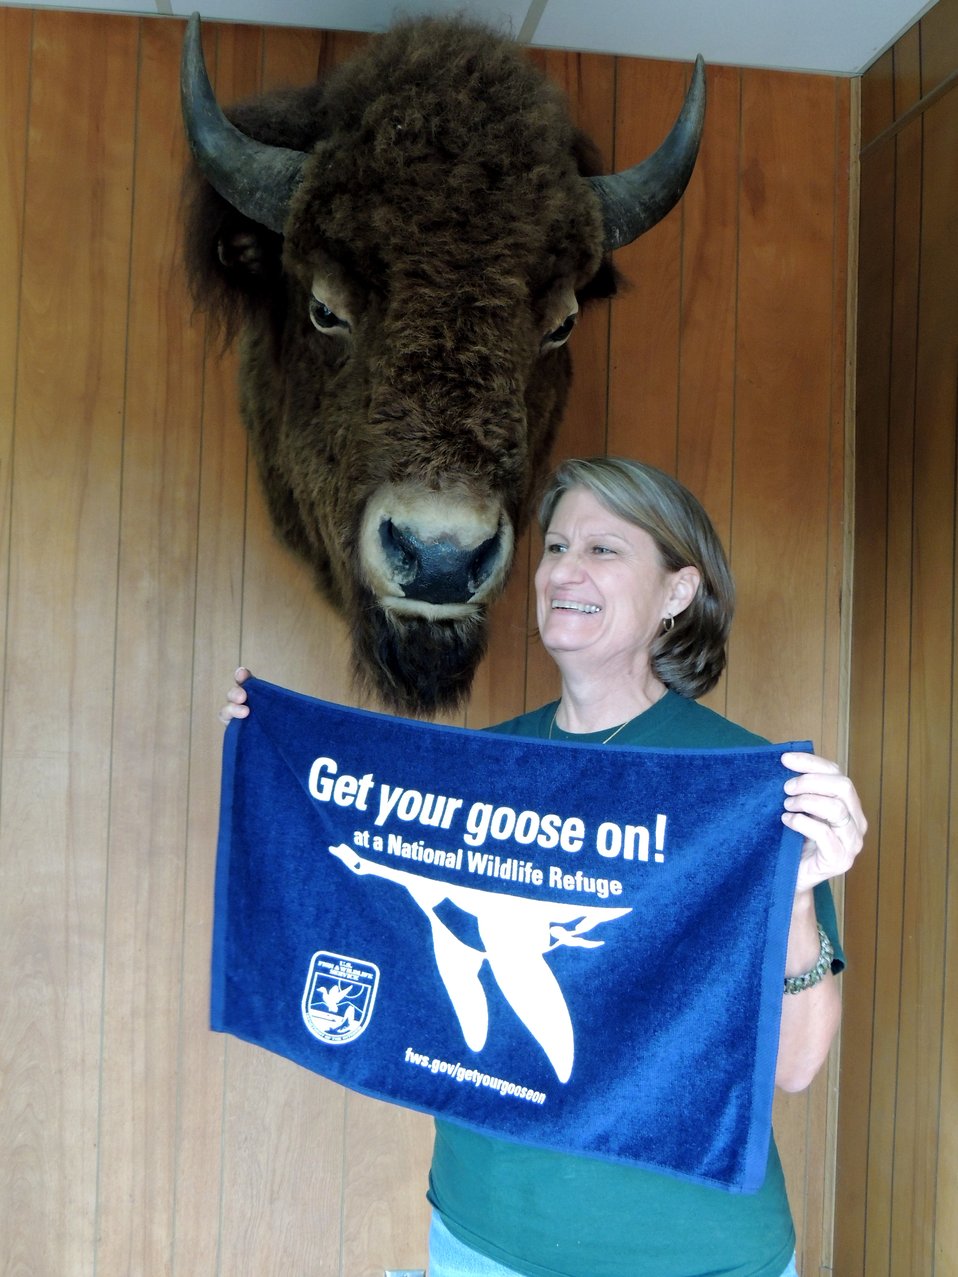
Get Your Goose On!

Wichita Mountains National Wildlife Refuge in Oklahoma.